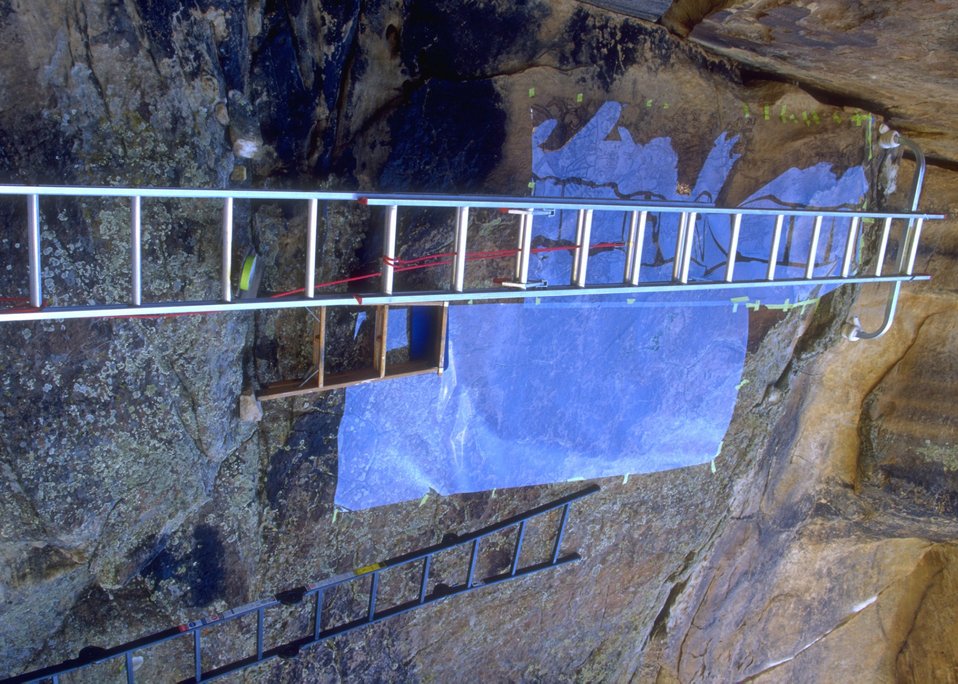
Mapping a petroglyph panel in Whoopup Canyon, Newcastle Field Office.